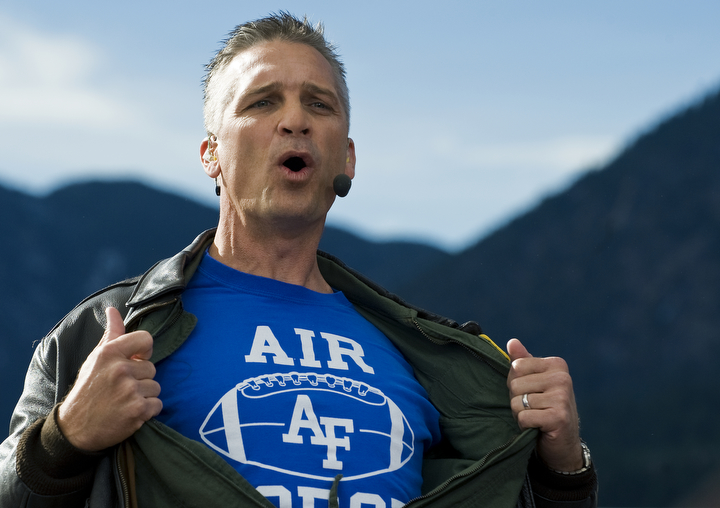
ESPN films 'College GameDay' from Academy

Lt. Col. Scott Thomas, an All-American defensive back for the 1985 U.S. Air Force Academy football team, reveals his prediction for the winner of the Air Force vs. Army football game with ESPN's